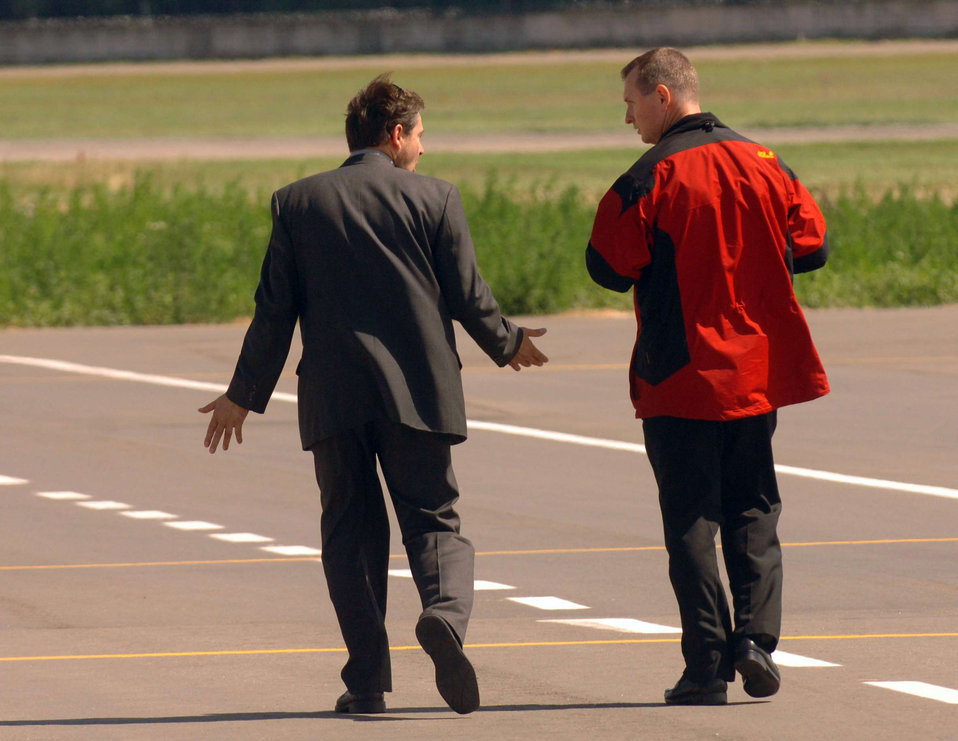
Airmen provide presidential support in Moscow

Capt. William Taylor discusses the use of portable light carts with an airport official in preparation for President Barack Obama's visit to Russia July 3 at Moscow's Vnukovo International Airport. Captain Taylor is the 86th Contingency Response Group's detachment commander of the 17-member presidential support team from Sembach Air Base, Germany.